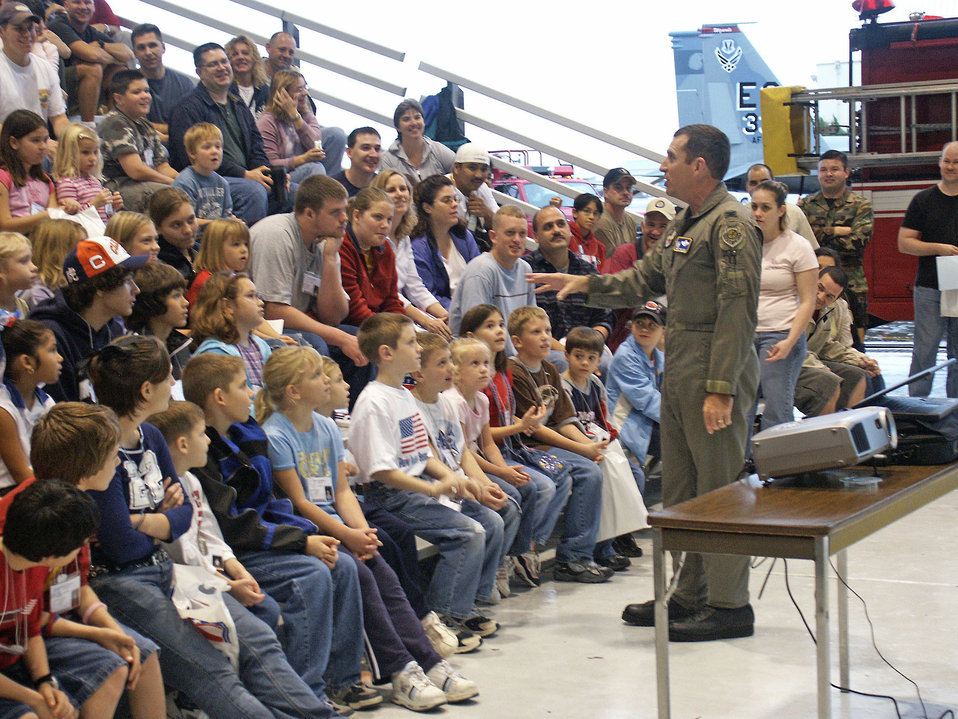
Operation Hero 'deploys' Airmen's children

EGLIN AIR FORCE BASE, Fla. -- Col. Brett Williams, 33rd Fighter Wing commander, talks with families before the kick off of Operation Hero on Jan. 8. The event was designed to help children better understand what a deployment is and what happens when their parents deploy.